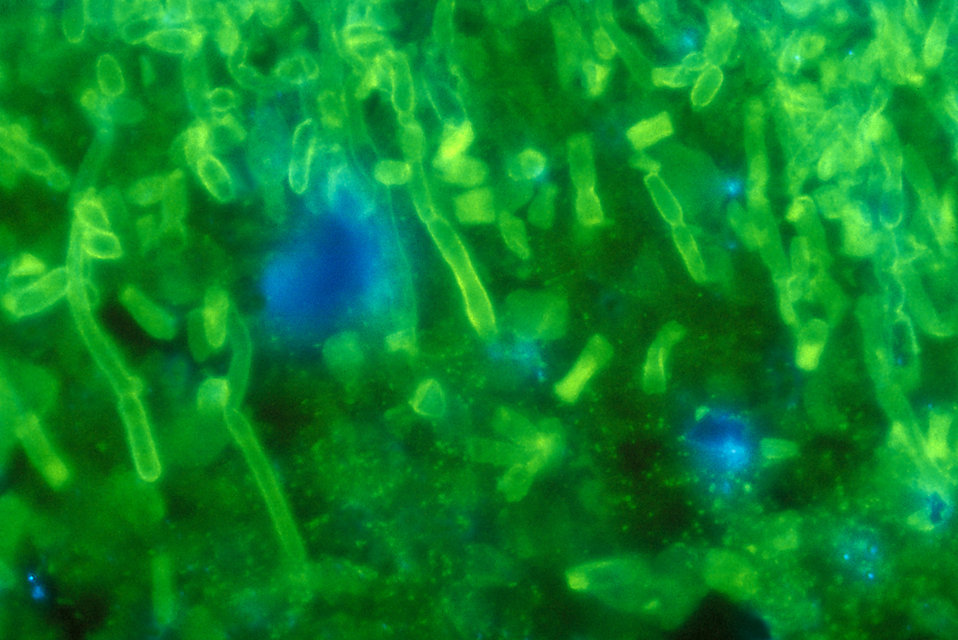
This slide reveales some of the histopathologic changes seen in candidiasis due to a Candida sp. using FA stain technique.